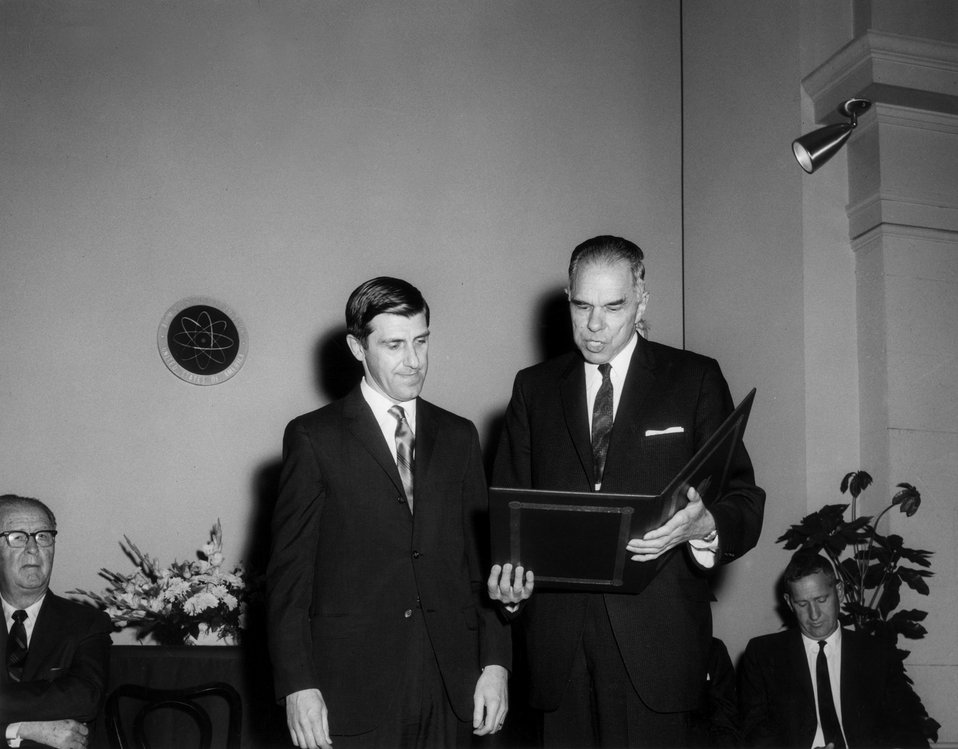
7th E.O. Lawrence Award Ceremony, April 27, 1966, Wash., D.C. L-R: Senator Anderson, Dr. Huizenga, Chairman Seaborg, Dr. Agnew.